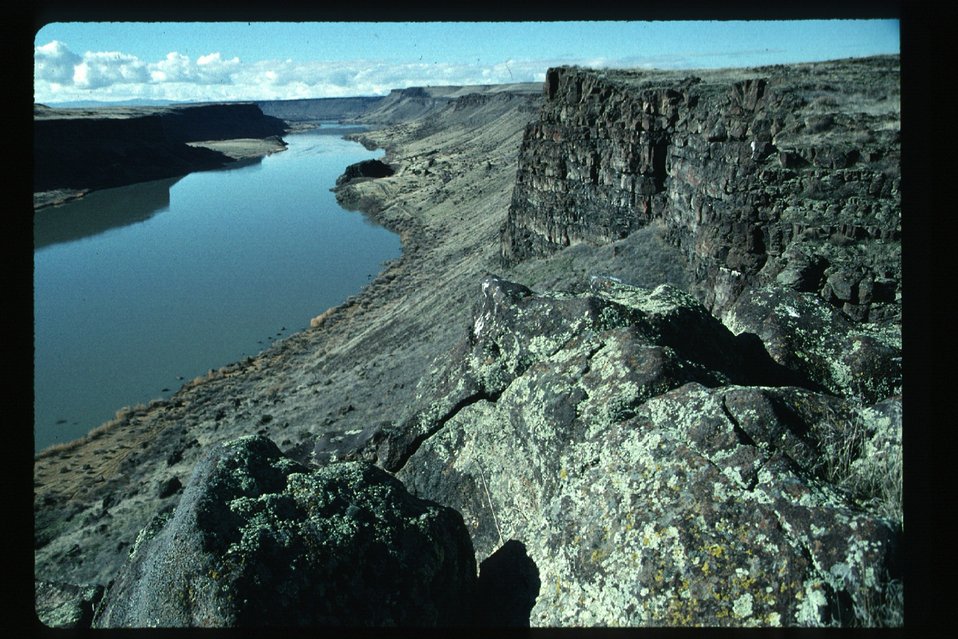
Snake River narrows CJ Strike Reservoir Snake River Canyon Owyhee Field Office LSRD Lower Snake River District